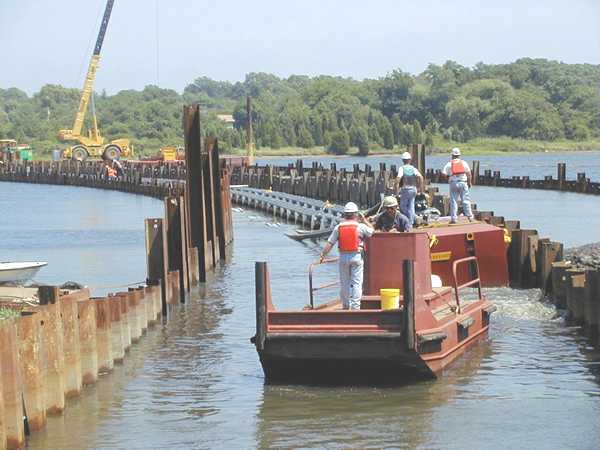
2001, Guiding and laying down new cable conduit